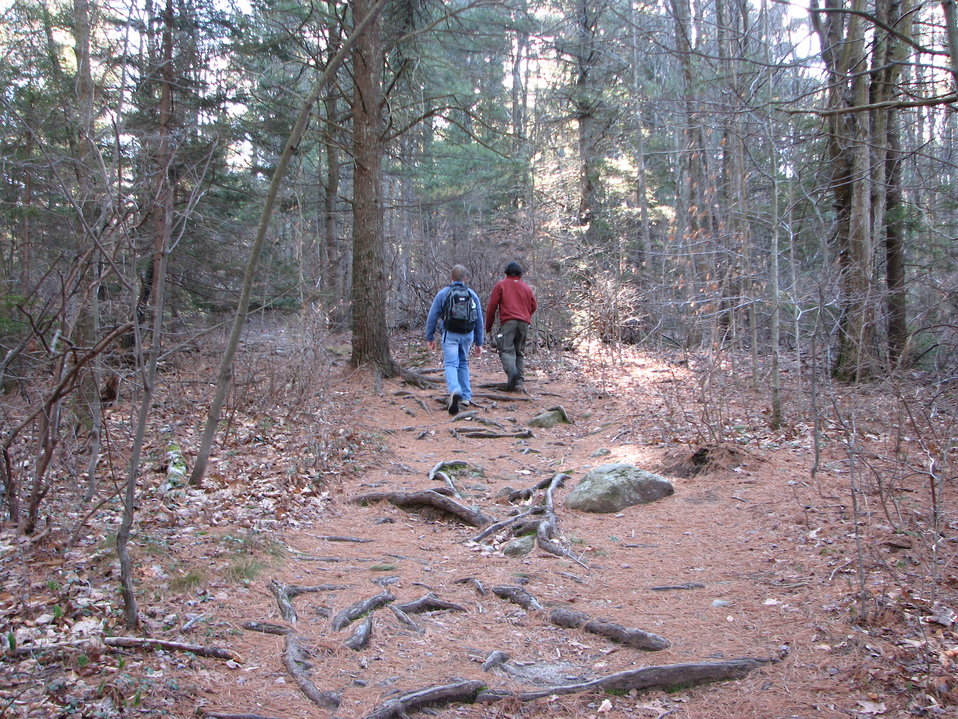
Wapack Trail 2

Wapack National Wildlife Refuge, New Hampshire.